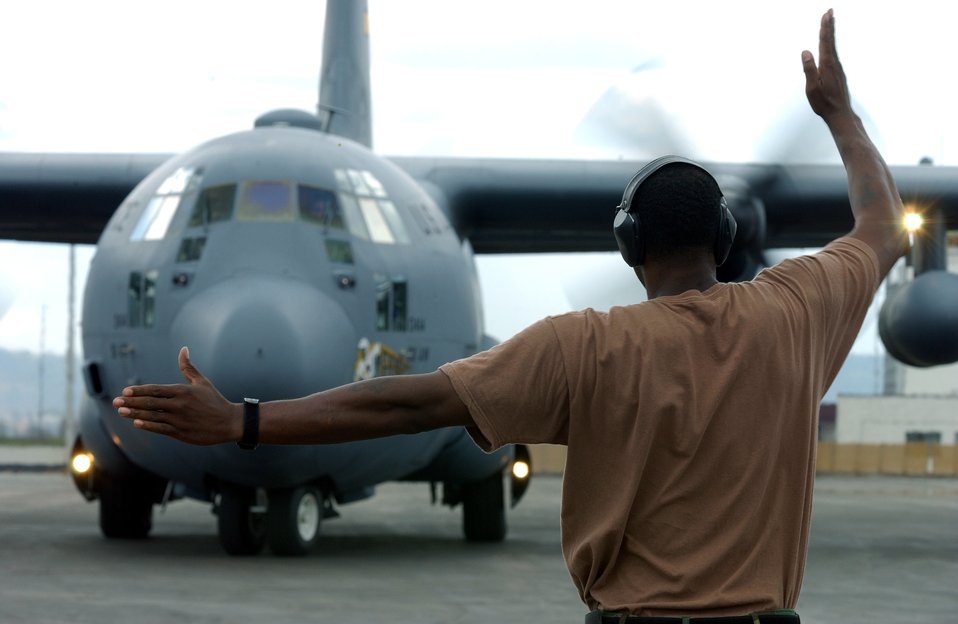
C-130 in Kigali, Rwanda for humanitarian mission

Staff Sgt. Austin Layton marshals a C-130 Hercules aircraft Oct. 24 at the international airport at Kigali, Rwanda. He is a flight manager assigned to the 322nd Air Expeditionary Group. Sergeant Jackson is deployed from Ramstein Air Base, Germany, supporting a humanitarian mission to help the African Union mitigate the crisis in Sudan's Darfur Region.